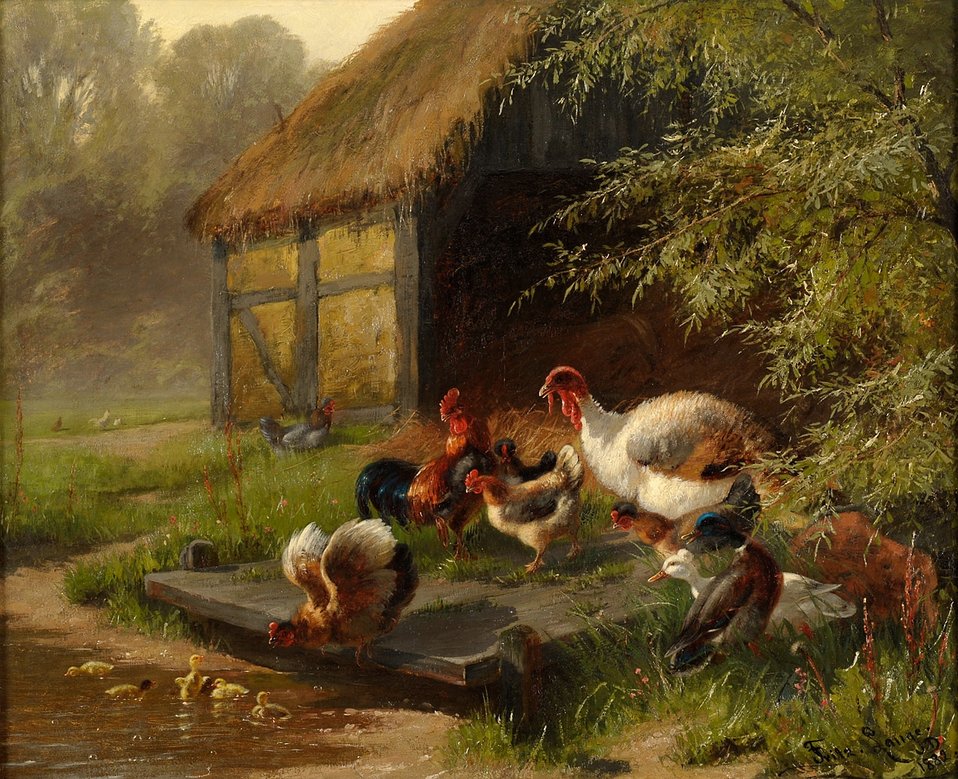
Buntes Federvieh. Signiert. Datiert 1882. Öl/Lwd., 66 x 82 cm